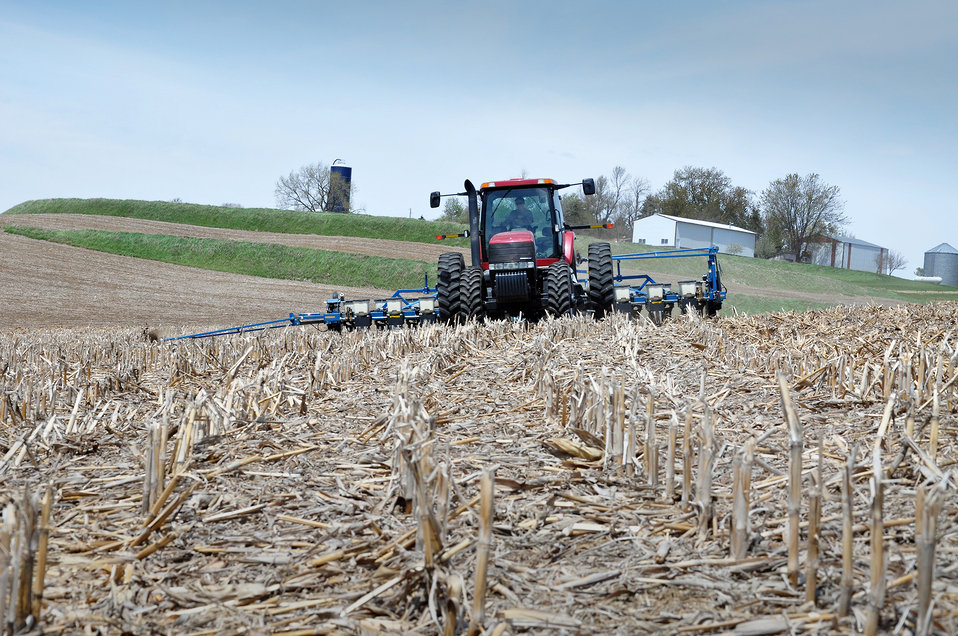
Disturb Not 3

Conservation tillage practices like no-till allow farmers to plant cash crop seeds with little disturbance to the soil, which protects the habitat for billions of the soil’s microorganisms.